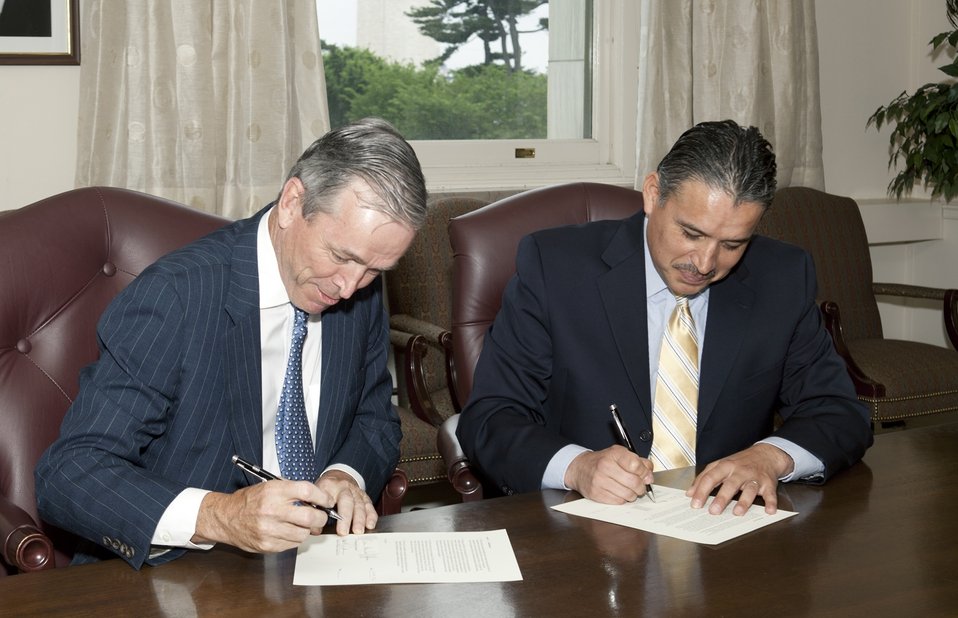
Agriculture Deputy Assistant Secretary for Administration Oscar Gonzales Jr. (right) and f Keep America Beautiful (KAB) President Matthew McKenna sign a Memorandum of Understanding at the U.S. Department of Agriculture in Washington, D.C., on Thursday, April 25, 2012. This memorandum establishes a framework whereby the U.S. Department of Agriculture can partner with KAB to promote the creation of community produce gardens across America. The memorandum focuses on establishing gardens in communities where a lack of access to fresh and healthy foods creates increased risks of food insecurity and obesity risks.